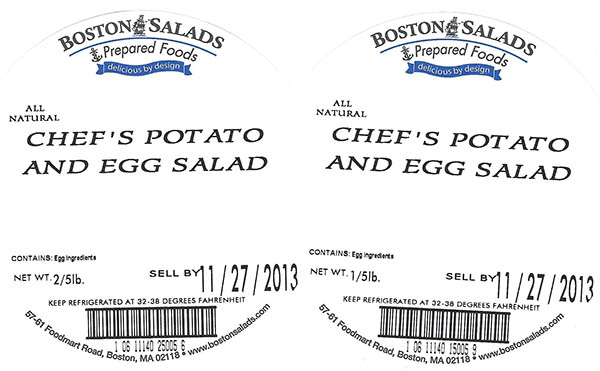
RECALLED – Prepared salads

October 24, 2013 – Product Recall – Boston Salads and Prepared Foods Recalling Ready-To-Eat Products Because of Possible Health Risk.